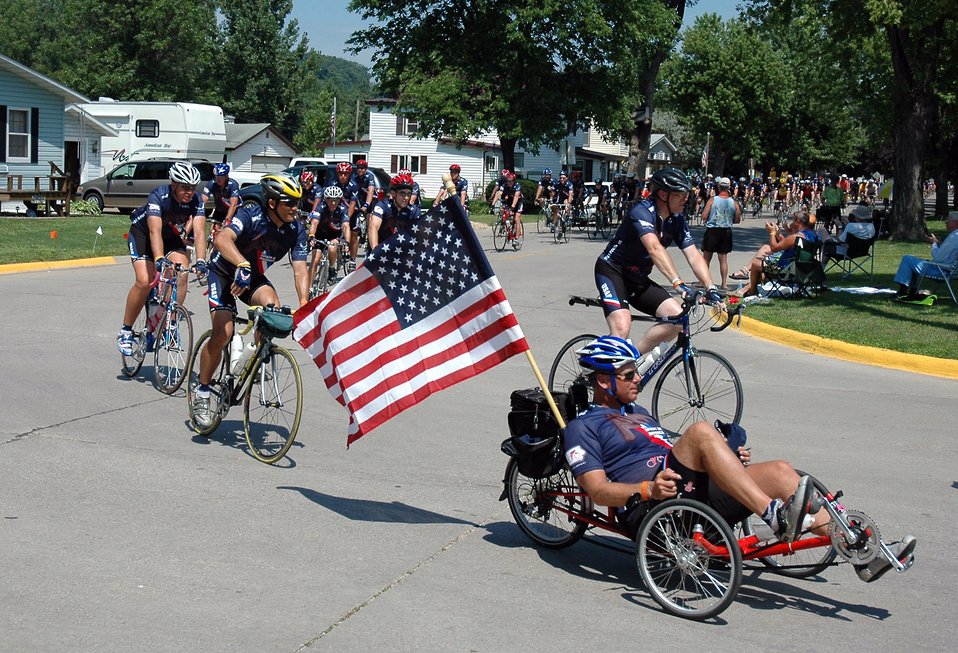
An Air Force finish

GUTTENBERG, Iowa -- After 485 miles, standard-bearer Col. Bob Lindner leads Team Air Force cyclists into Guttenberg to end the 33rd Annual Des Moines Register Annual Great Bicycle Ride Across Iowa. Following the flags in advance of the two-column formation are Col. Bob Norman and Lt. Gen. William Welser III. Riding into the last town in formation has become an Air Force tradition in the 11 years that Air Force teams have participated in the event. Colonel Lindner is from the University of Illinois ROTC detachment. Colonel Norman is assigned to the Tanker Airlift Control Center, and General Welser is the 18th Air Force Commander, both at Scott Air Force Base, Ill.